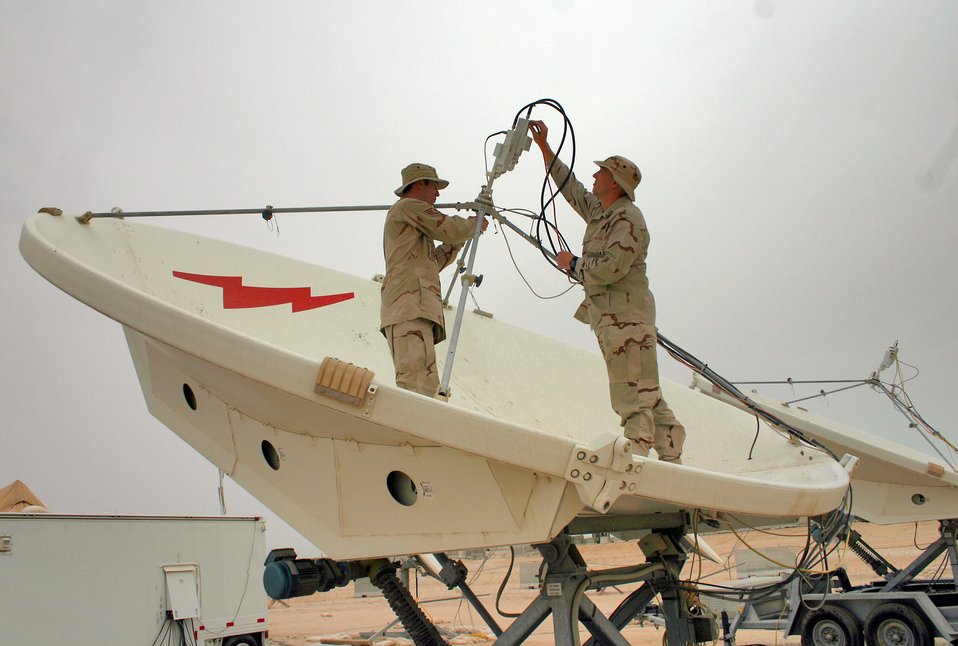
Space mission supports Operation Iraqi Freedom

Staff Sgt. Neil Holdren and Capt. Kevin Mahar accomplish a periodic maintenance inspection on an antenna feed. The space technicians are deployed to the 379th Air Expeditionary Wing.